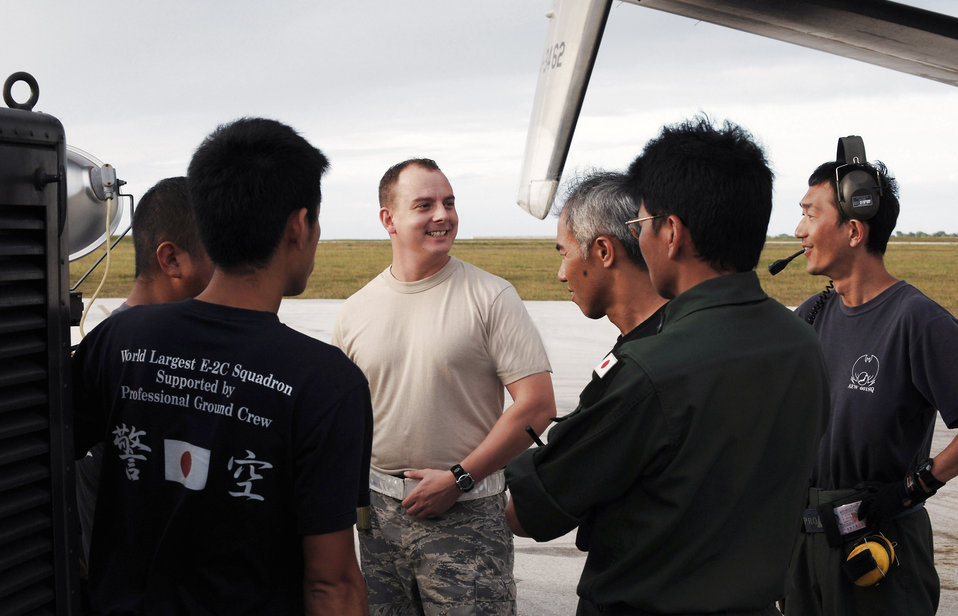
Cope North 09-1

Tech. Sgt. Anthony Bowman coordinates fuel off loads Feb. 5 with Japanese Air Self Defense Force aircraft maintainers at Andersen Air Force Base, Guam, during Cope North 09-1. JASDF aircraft are joining forward-deployed U.S. Air Force and Navy aircraft to participate in this year's Cope North exercise Feb. 2 through 13, with a focus on interoperability. Sergeant Bowman is a fuels specialist with the 36th Logistics Readiness Squadron at Andersen AFB.